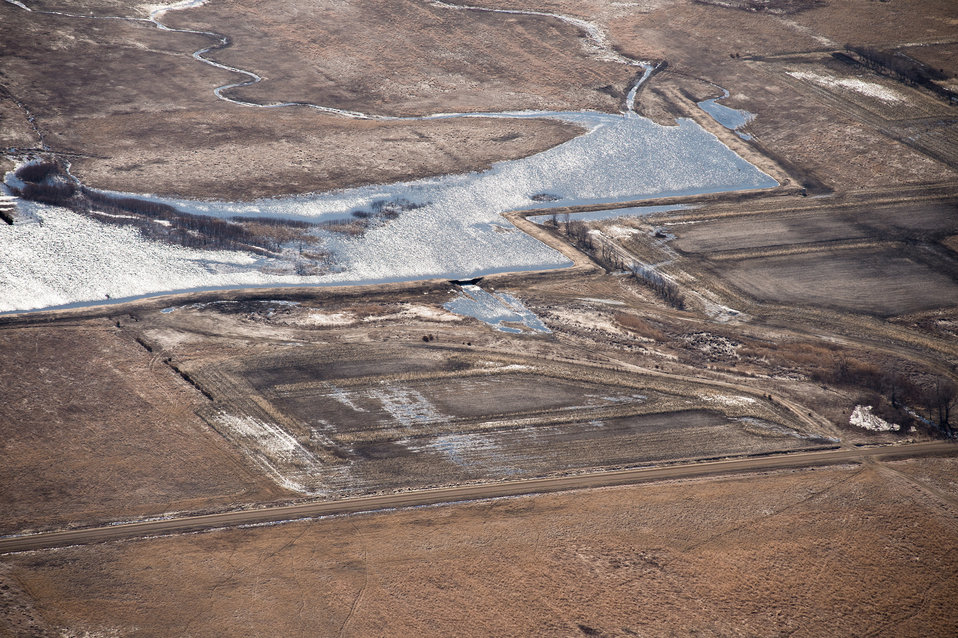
Ehlert North U.S. Department of Agriculture (USDA) Natural Resources Conservation Service (NRCS) Wetland Reserve Program (WRP) in Wilkin County, MN, on Tuesday, April 30, 2013. For information about this and other programs from the USDA Red River Basin Initiative (RRBI) please see www.mn.nrcs.usda.gov/news/features13/RRBI.html.